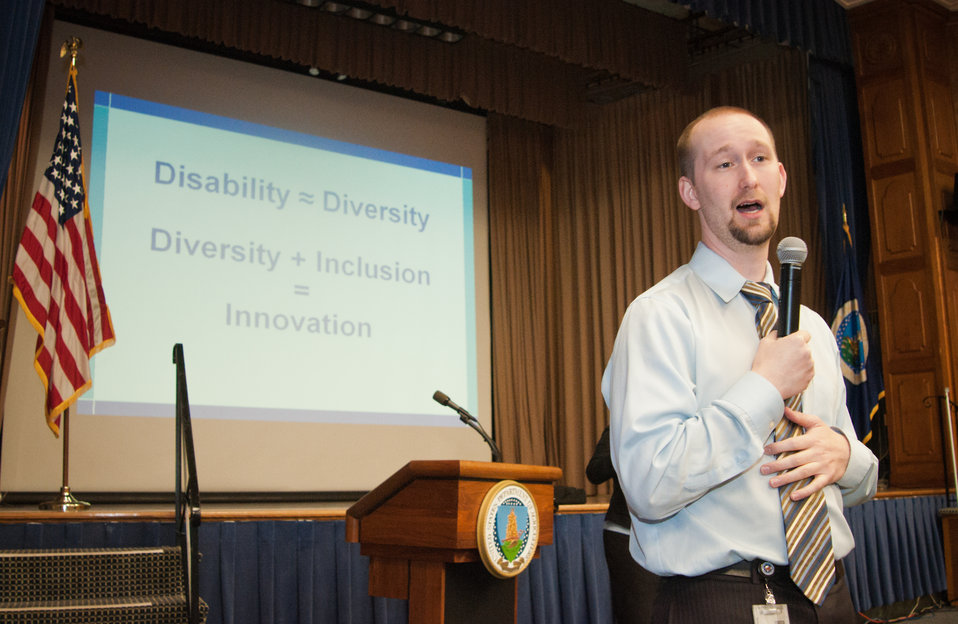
Office of Personnel Management (OPM) Diversity and Inclusion Program Manager Michael Murray discusses diversity and inclusion at the U.S. Department of Agriculture (USDA) Office of Human Resources Management (OHRM) Disability Employment Program Team Training at USDA in Washington, D.C. on Tuesday, May 14, 2013.